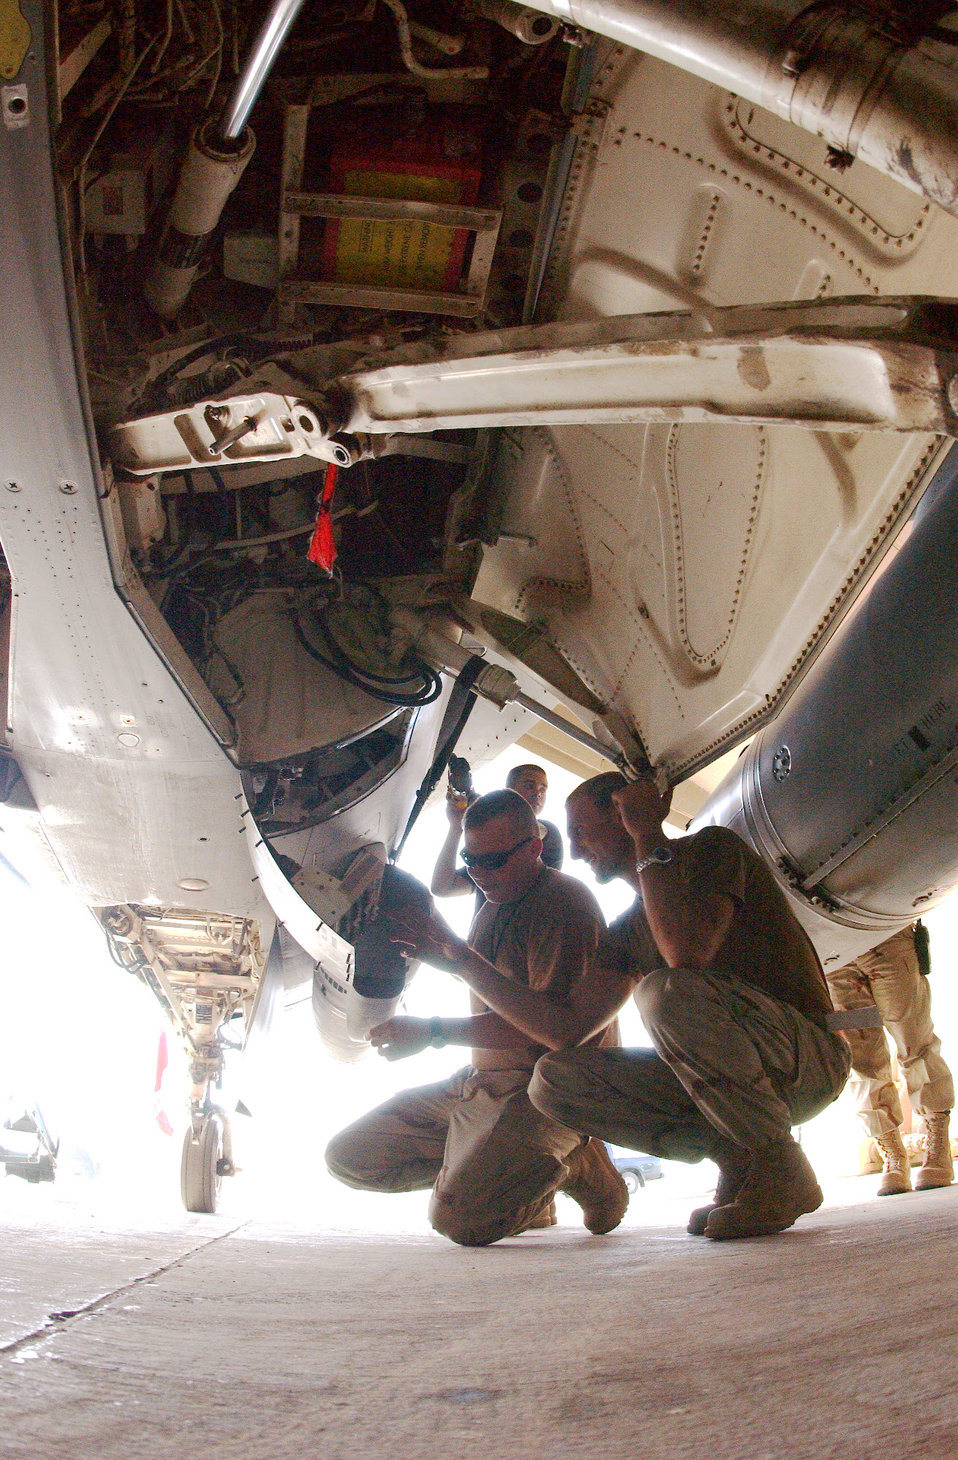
F-16 maintainers make sure curtain gets raised

BALAD AIR BASE, Iraq -- Staff Sgt. James Lucas and Senior Airman Justin Foulsham install a liquid oxygen converter on an F-16 Fighting Falcon here. They are aircraft maintainers with the 332nd Expeditionary Aircraft Maintenance Squadron.